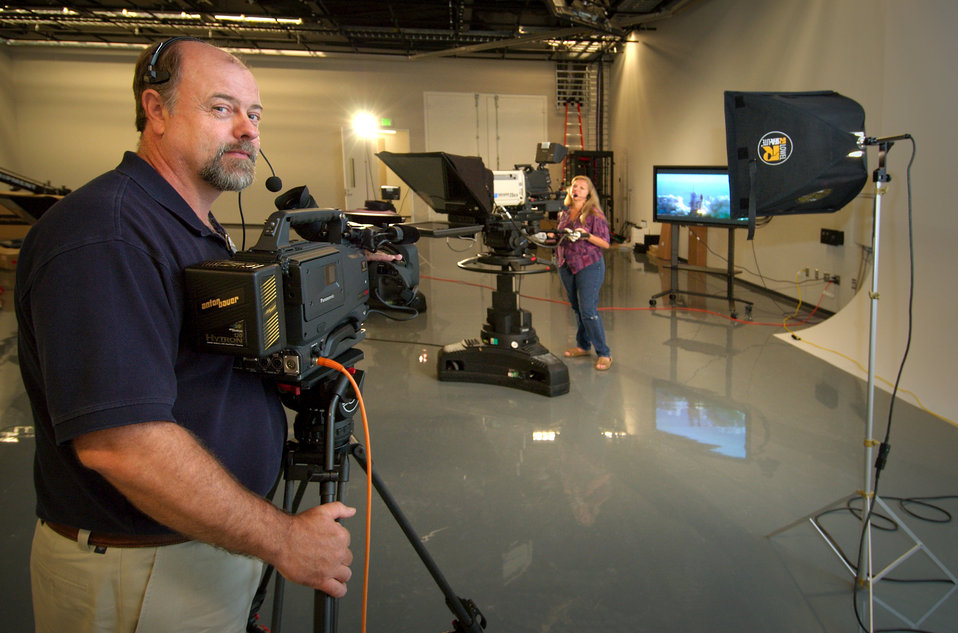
This was the Centers for Disease Control's (CDC) Bryon Skinner, a Television-Broadcast Studio Manager and Videographer, and Videographer Susy Mercado, in the background, shown working behind the television cameras in the organization's Global Communications Center television studio.